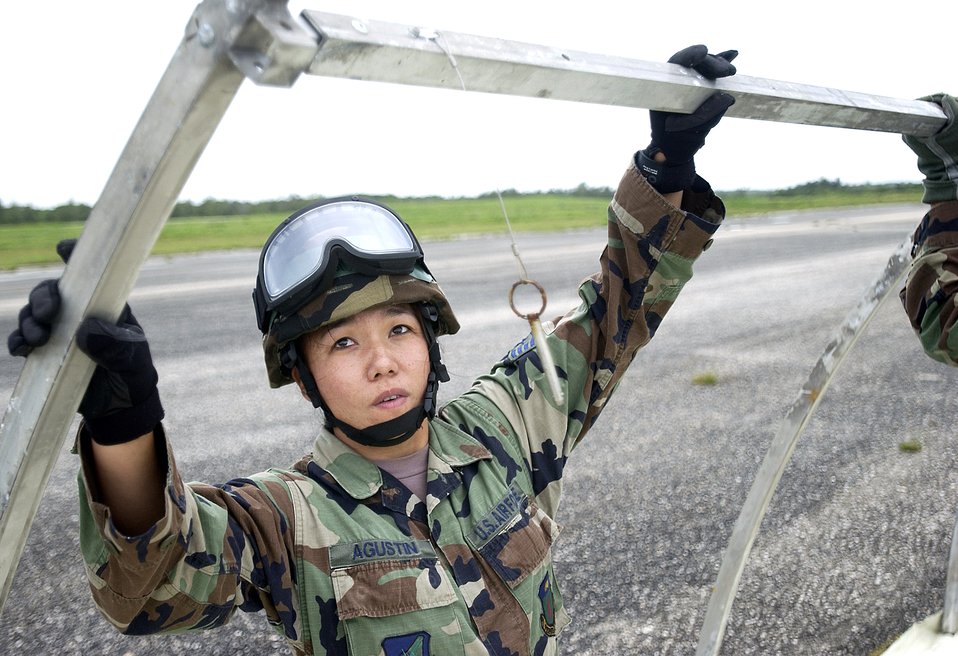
'Beverly' visits Guam

ANDERSEN AIR FORCE BASE, Guam -- Staff Sgt Delina Agustin sets up a tent here during Exercise Beverly Palm 05-07. The routine exercise is held several times a year to sharpen the mobility and wartime capabilities of participating servicemembers. Sergeant Agustin is assigned to the 613th Mobility Response Squadron.